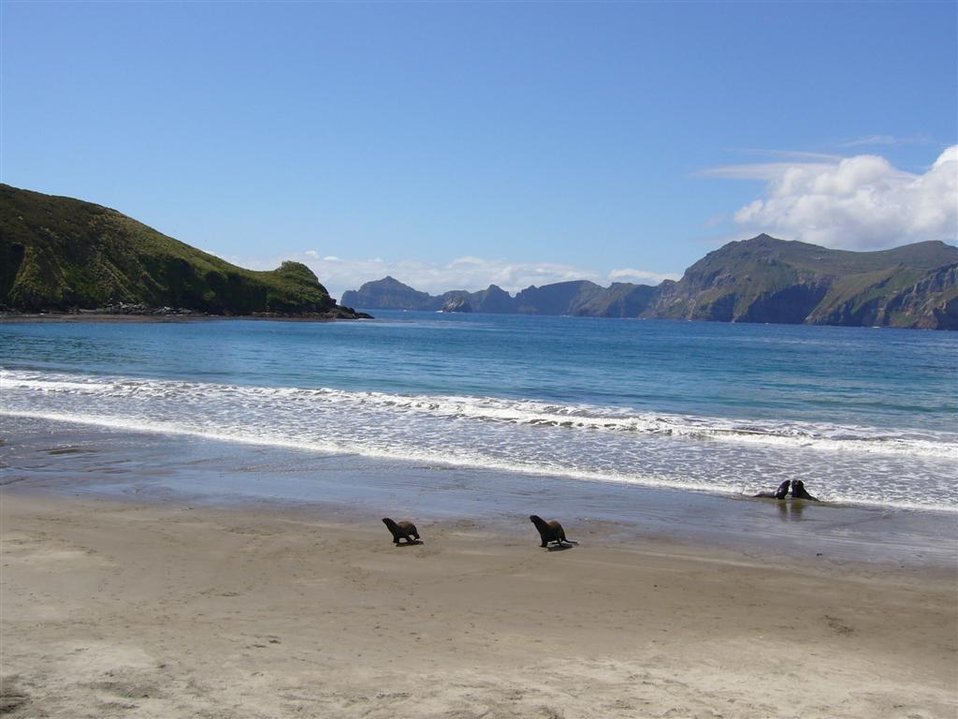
Campbell Island, SW Bay - looking North.